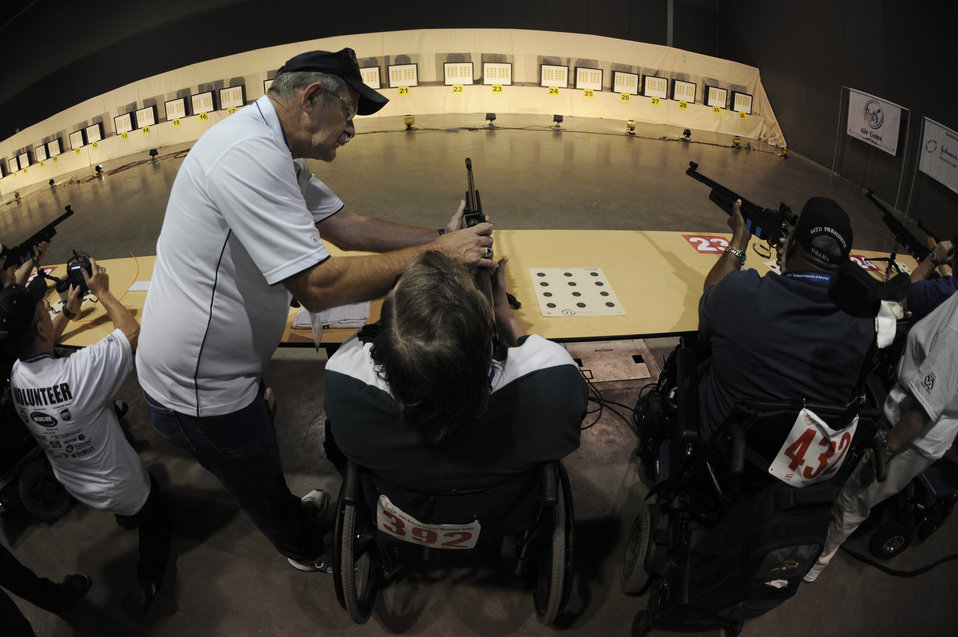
Wheelchair athletes participate in wheelchair games

William Ethridge gets assistance from a volunteer as he competes in the air gun competition Jul. 14 during the 29th National Veterans Wheelchair Games in Spokane, Wash. Ethridge is an Air Force veteran and resides in Spokane, Wash. The 29th National Veterans Wheelchair Games runs through Jul. 19.